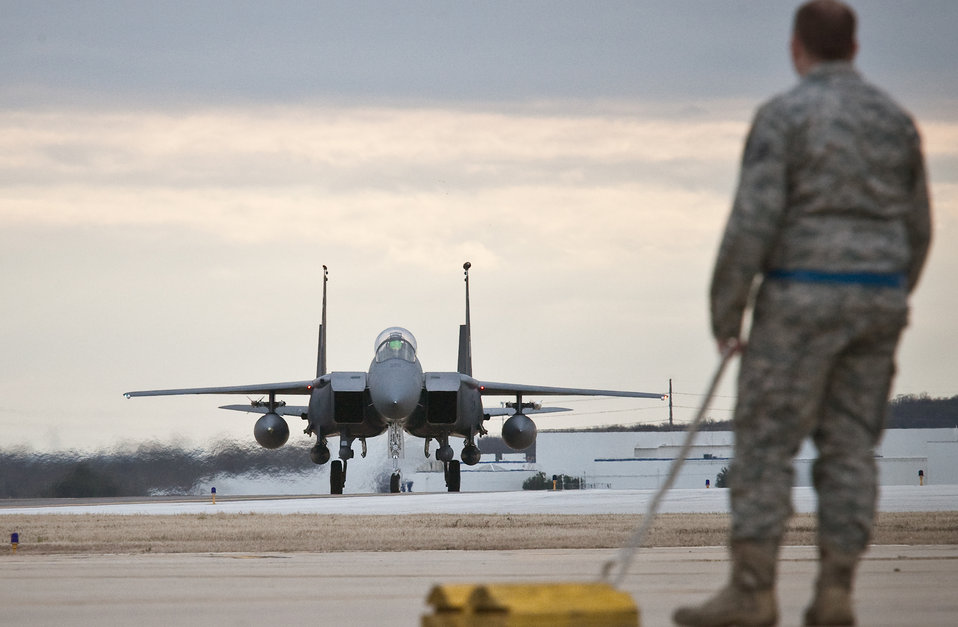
F-15E pilot strikes 4,000 hours

A crew chief stands ready with parking chocks while pilot Lt. Col. David Iverson and Capt. Tim Tendall, with the 492nd Fighter Squadron, taxi a F-15E Strike Eagle to a parking spot at Lackland Air Force Base, Texas, Jan. 11, 2010. Colonel Iverson passed 4,000 flight hours in the F-15E during the flight from Royal Air Force Lakenheath, England.